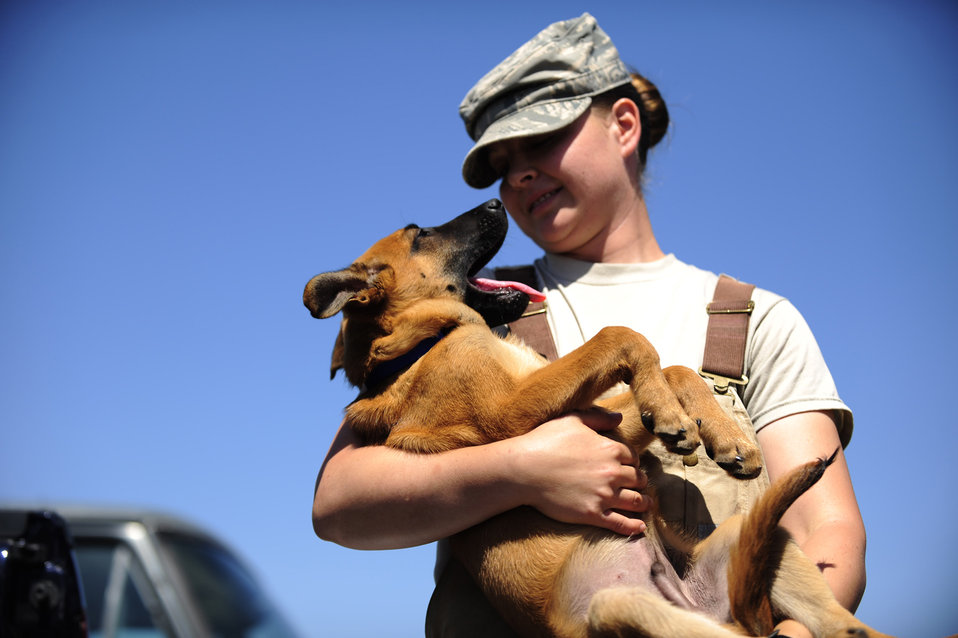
Training for military working dogs

Staff Sgt. Christa Quam holds her puppy which will enter the military working dog program in a year on Lackland Air Force Base, Texas.